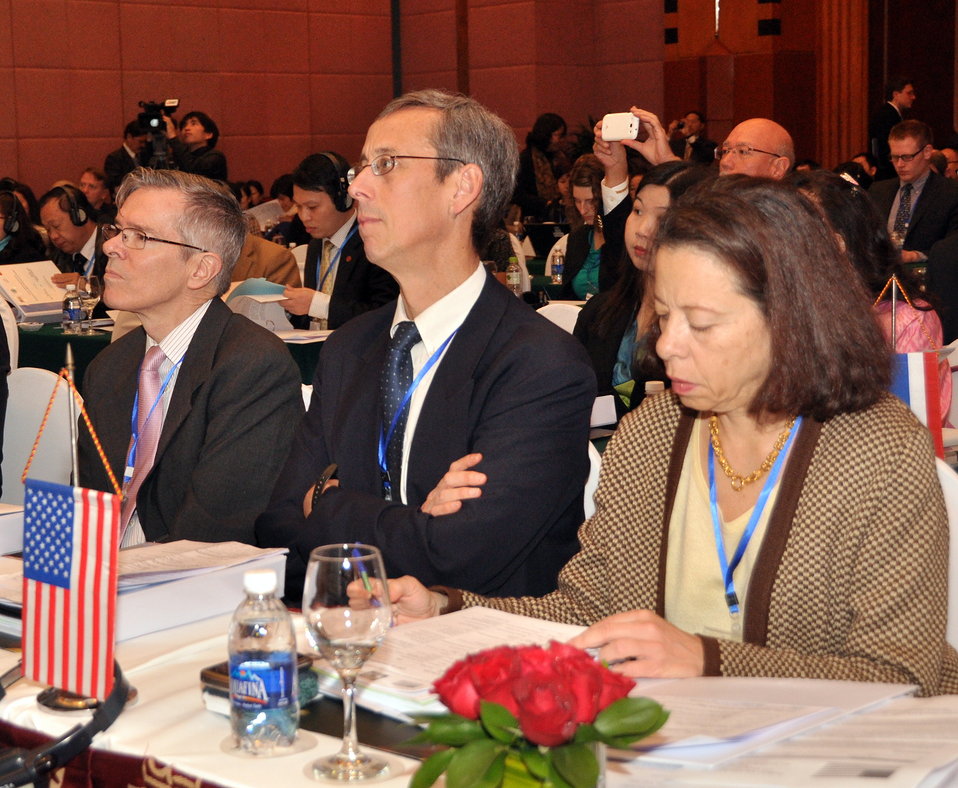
Delegation from the United States to the LMI Infrastructure Best Practices Exchange

Hanoi: January 14, 2013